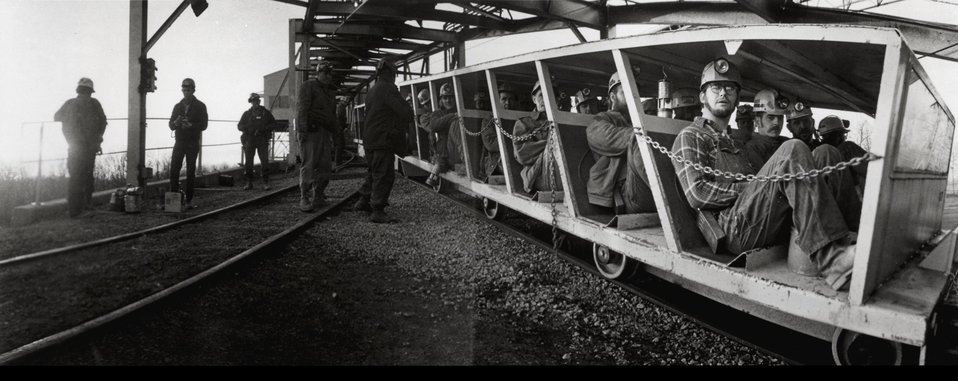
Coal miners, many of them young men in their twenties, wait in a steel-roofed 'mantrip car' to descend a long, sloping tunnel to the level of the coal seam. These men are about to start a shift at an underground mine in Illinois. c. 1972